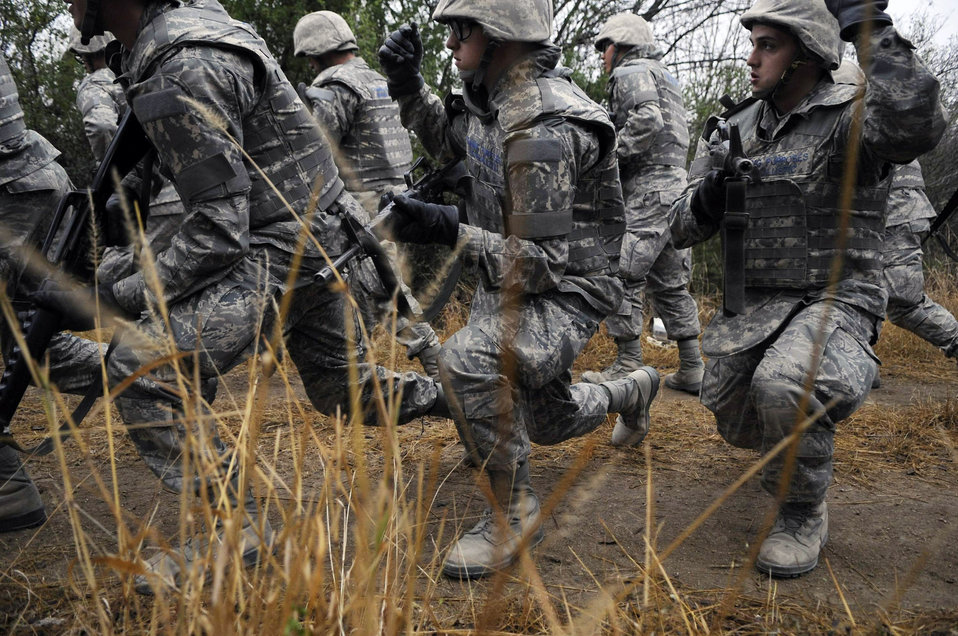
Trainees slew the BEAST in new basic training program

Airmen Basic trainees in body armor use hand signals as they take a knee during a tactical drill movement down an improvised explosive device lane Dec. 17 as part of the five-day deployment exercise called the Basic Expeditionary Airman Skills and Training, or BEAST, which kicked off Dec. 15 at Lackland Air Force Base, Texas. The BEAST is the newly built complex added into the extended 8.5 week Basic Military Training curriculum that began Nov. 5.